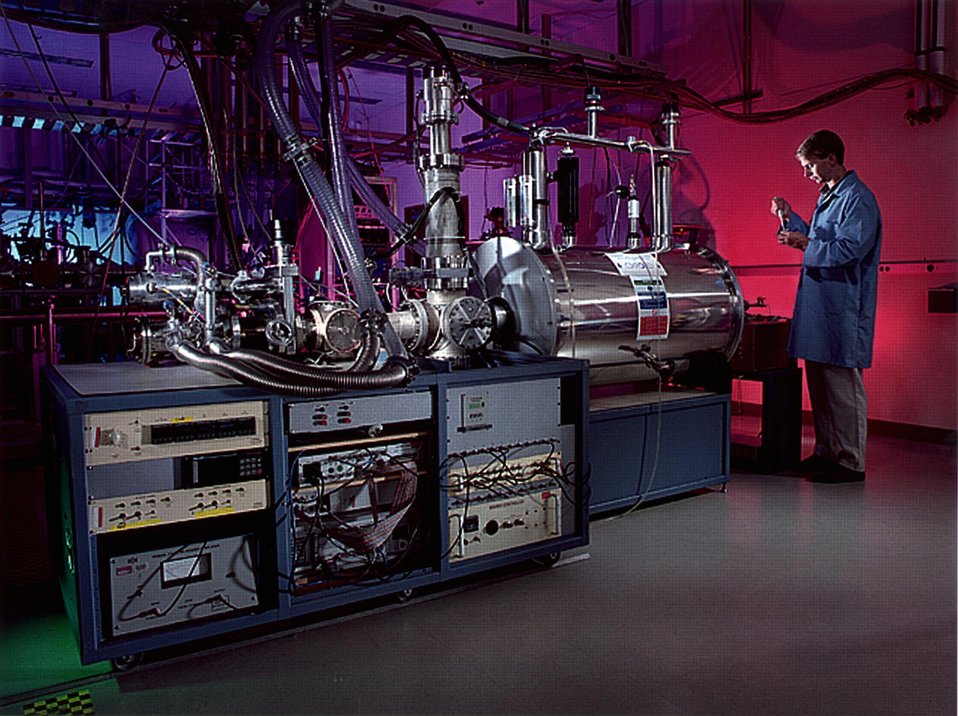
THE 7-TESLA FOURIER TRANSFORM ION CYCLOTRON RESONANCE (FTICR) MASS SPECTROMETER.

THE FTICR MASS SPECTROMETER IS SEEN IN PNNL'S WILLIAM R. WILEY ENVIRONMENTAL MOLECULAR SCIENCES LABORATORY, HIGH FIELD MASS SPECTROMETRY FACILITY. THE FTICR MASS SPECTROMETER IS USED FOR BIOCHEMICAL APPLICATIONS, SUCH AS COMBINATORIAL CHEMISTRY AND SEQUENCING.